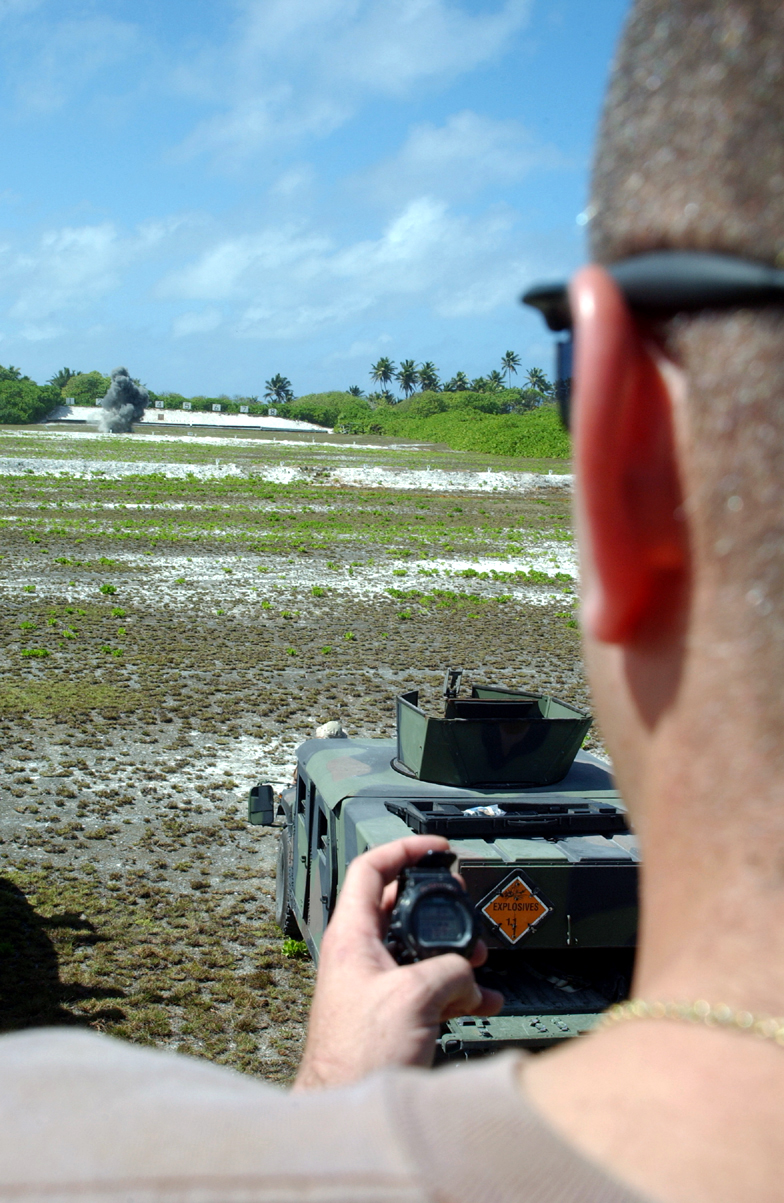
Making every second count

OPERATION ENDURING FREEDOM -- Tech. Sgt. David Ashcraft keeps a watchful eye on the detonation time during a training demolition operation at a forward-deployed location Aug. 24. The explosive ordnance disposal technicians can pinpoint the time of detonation by measuring the length of fuse. Sergeant Ashcraft is assigned to the 40th Expeditionary Civil Engineer Flight and is deployed from Nellis Air Force Base, Nev.